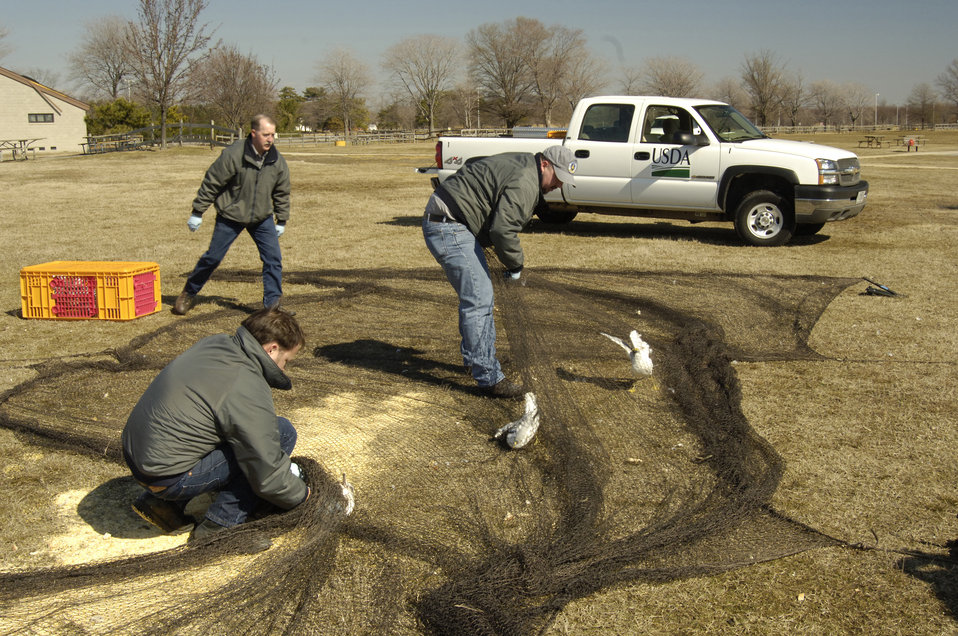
U.S. Department of Agriculture (USDA) Animal and Plant Health Inspection Service (APHIS) personnel humanely capture wild birds in Annapolis, Maryland on February 21, 2006 and test them for the Avian Influenza (AI) virus.